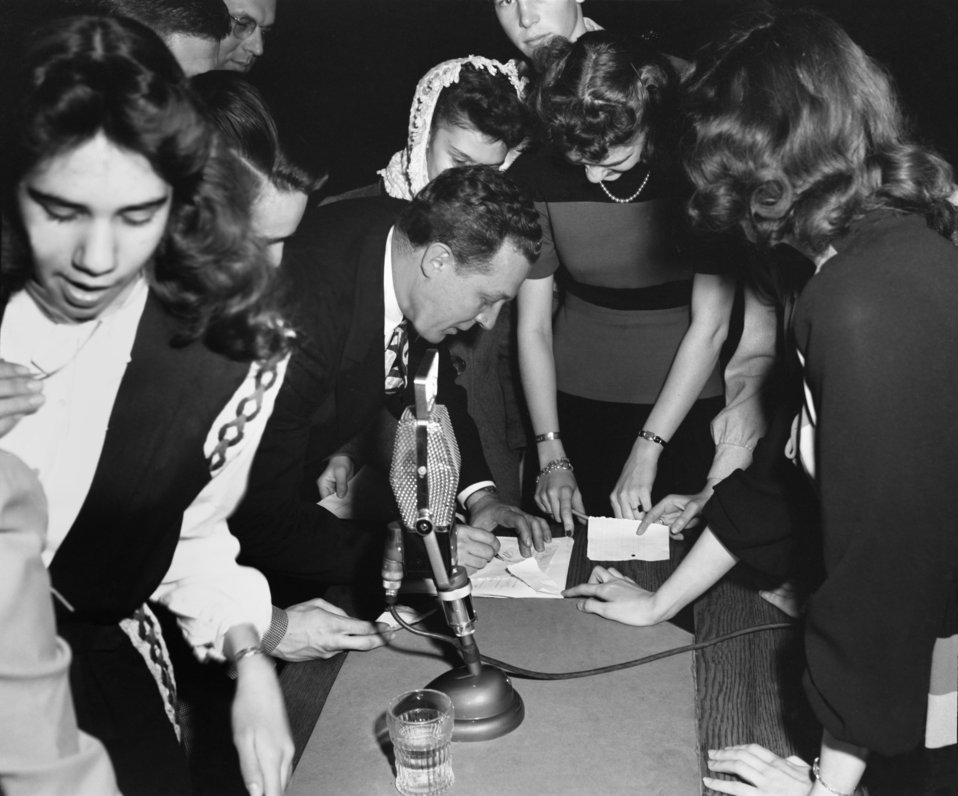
Radio Broadcast 'We the People' Oak Ridge 1947

3287-5d DOE photo Ed Westcott 2-9-1947 Oak Ridge Tennessee